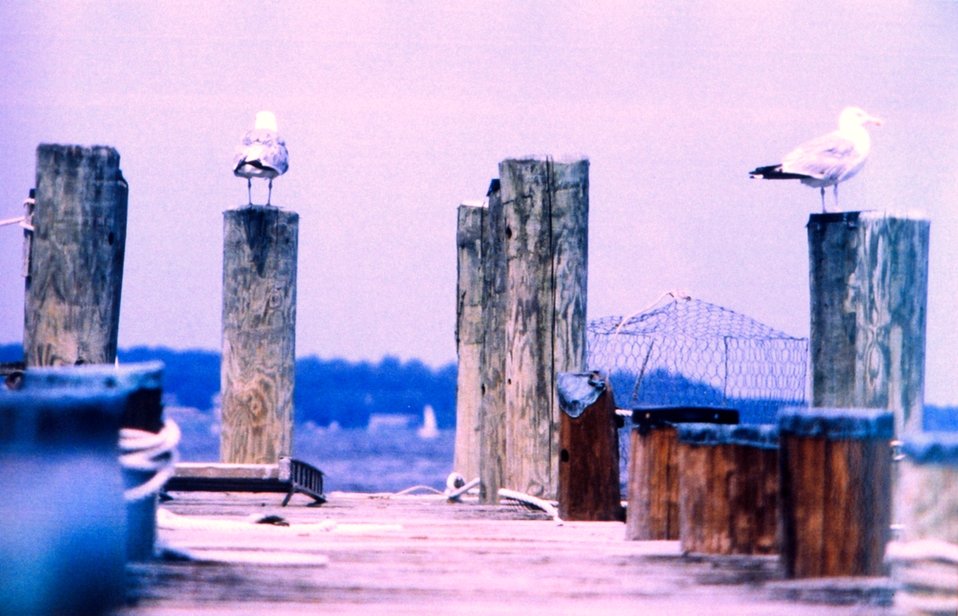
Gulls on a pier.